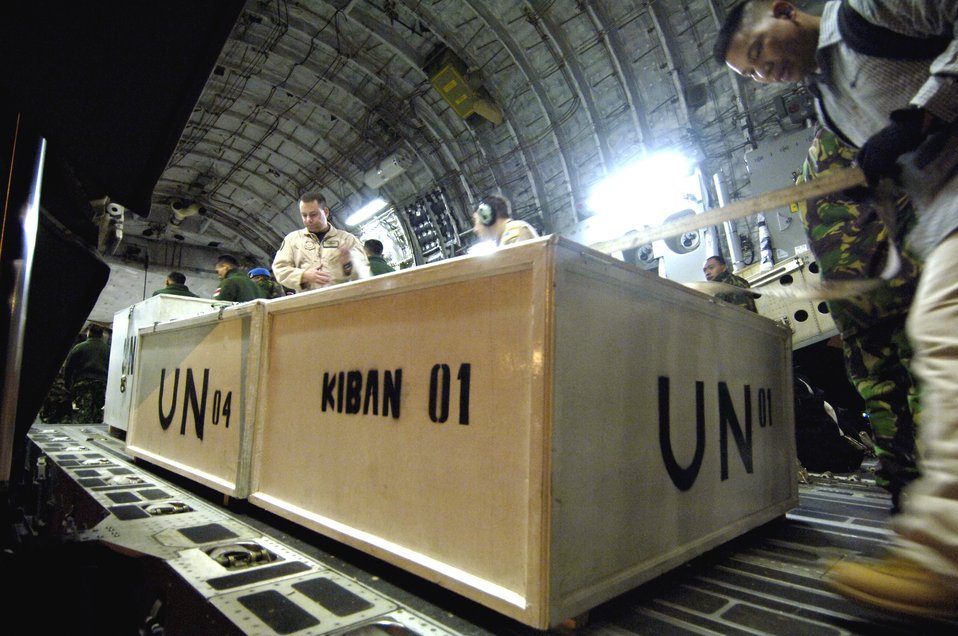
Moving the peacekeepers

C-17 Globemaster III crewmembers tie down equipment accompanying Indonesian peacekeeping troops deploying to Lebanon Nov. 8 in support of UNIFIL, the United Nation's Interim Force in Lebanon.